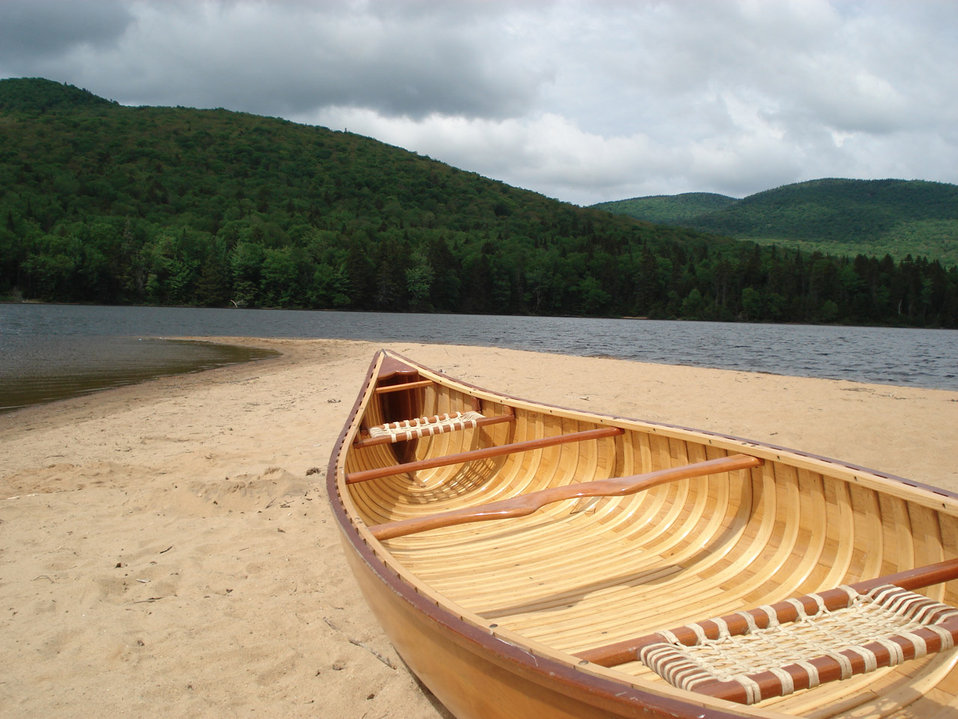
Sam canoe

Canoe on camping trip.